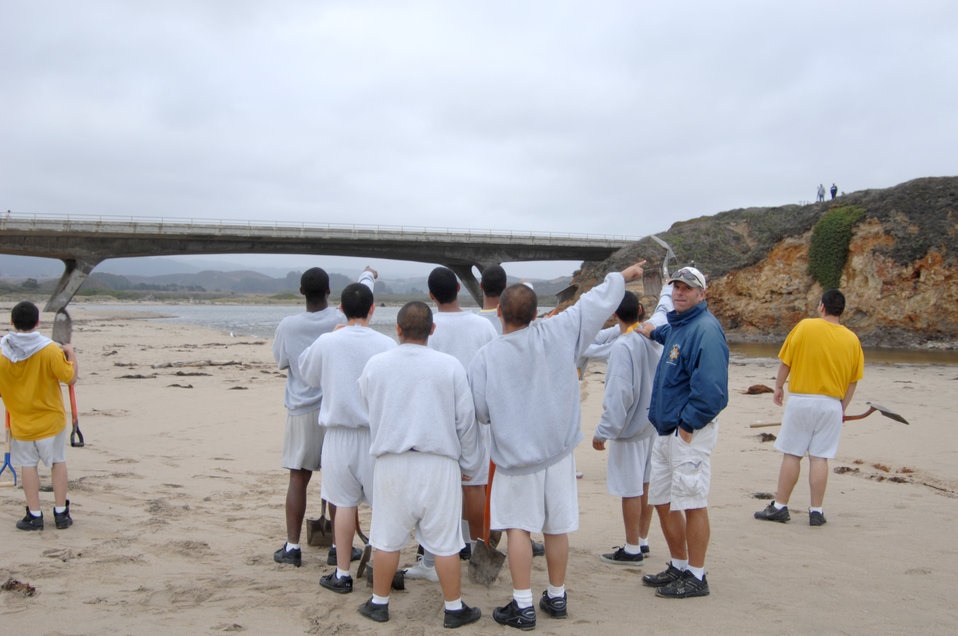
Camp Glenwood Boys Prepared to Dig

The boys from Camp Glenwood came to Pescadero to lend some muscle to the breaching efforts.